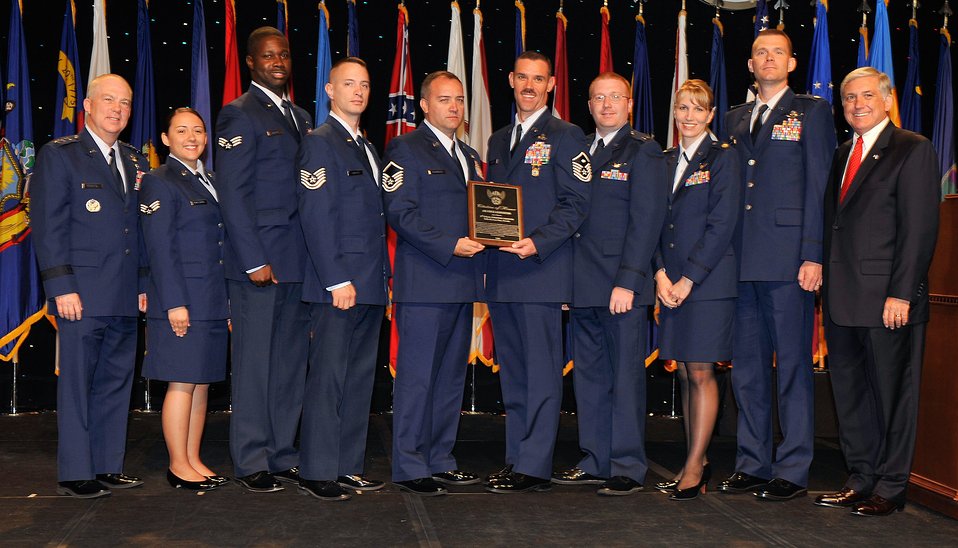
Special Operations Command earns multiple AFA awards

Airmen of the 3rd Special Operations Squadron receive the Citation of Honor at the Air Force Association's 2008 Air and Space Conference and Technology Exposition from Lt. Gen. Donald C. Wurster (far left) and Robert Largent (far right) Sept. 10 in Washington, D.C. The Citation of Honor was awarded to the 3rd SOS for its contribution to the development of aerospace power for the betterment of mankind. General Wurster is the Air Force Special Operations Command commander, and Mr. Largent is the Air Force Association chairman